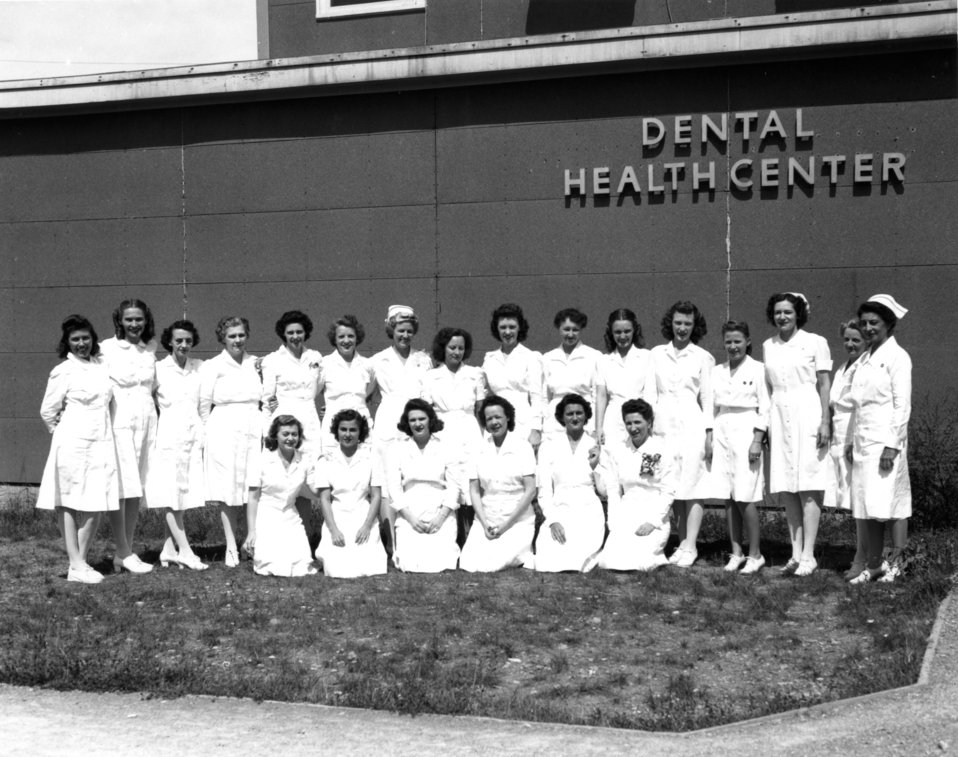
Medical at Oak Ridge